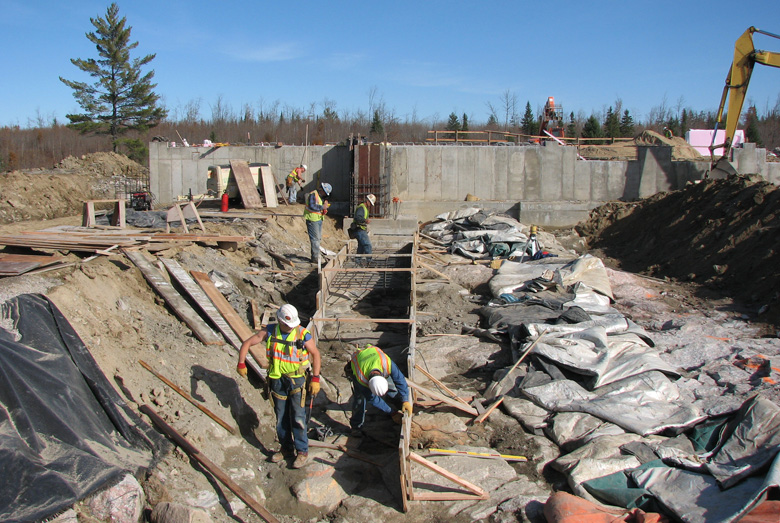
NOvA Project

Through the Recovery Act, the Office of Science is facilitating their NOvA Project in Orr, Minnesota.